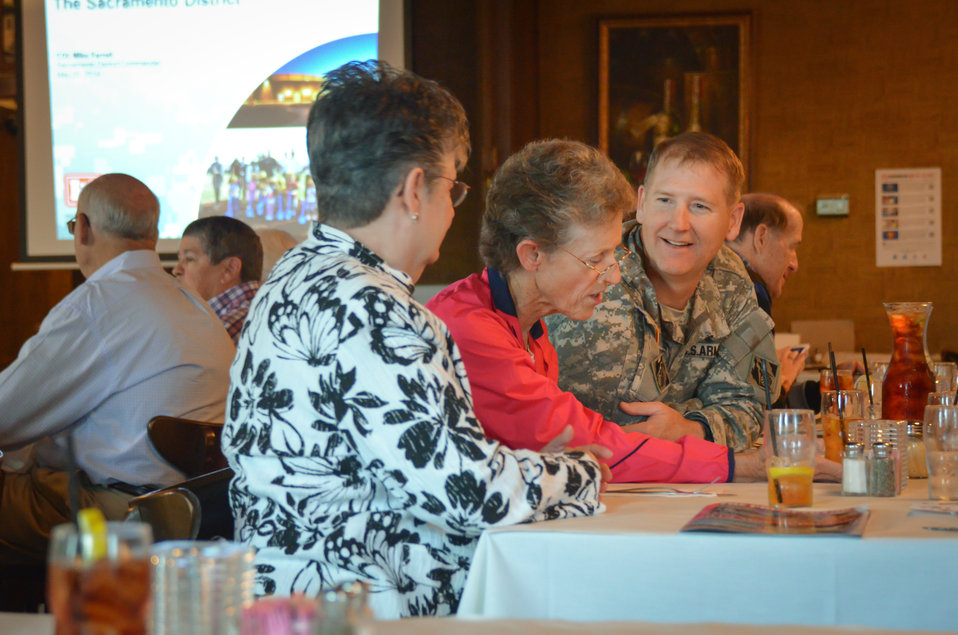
Sacramento District's 33rd annual retiree luncheon

U.S. Army Corps of Engineers Sacramento District commander Col. Mike Farrell listens to Barbara Davy, a district retiree, during the district's 33rd annual retiree luncheon May 20, 2014 in West Sacramento, Calif. Farrell attended the luncheon to update the crowd of 36 former employees on many of the district's ongoing civil and military projects.